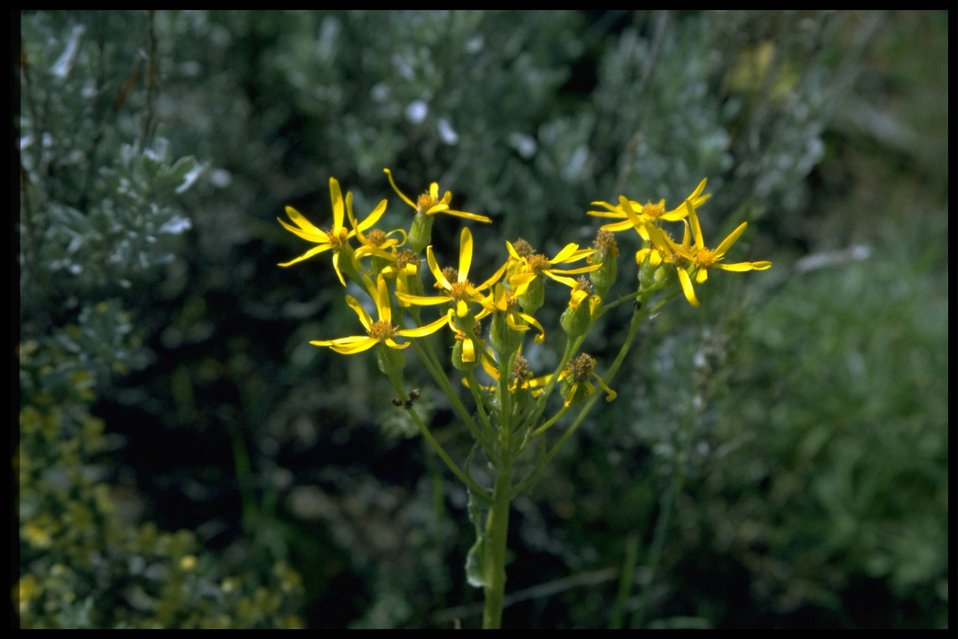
Medium shot of Tapertip Hawksbeard wildflower.